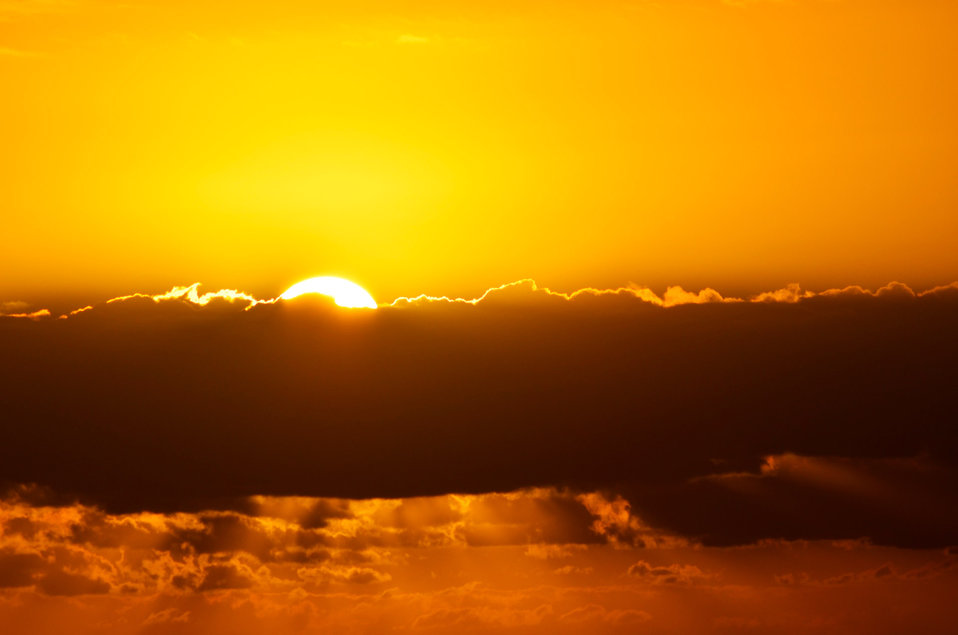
Sunset beach.